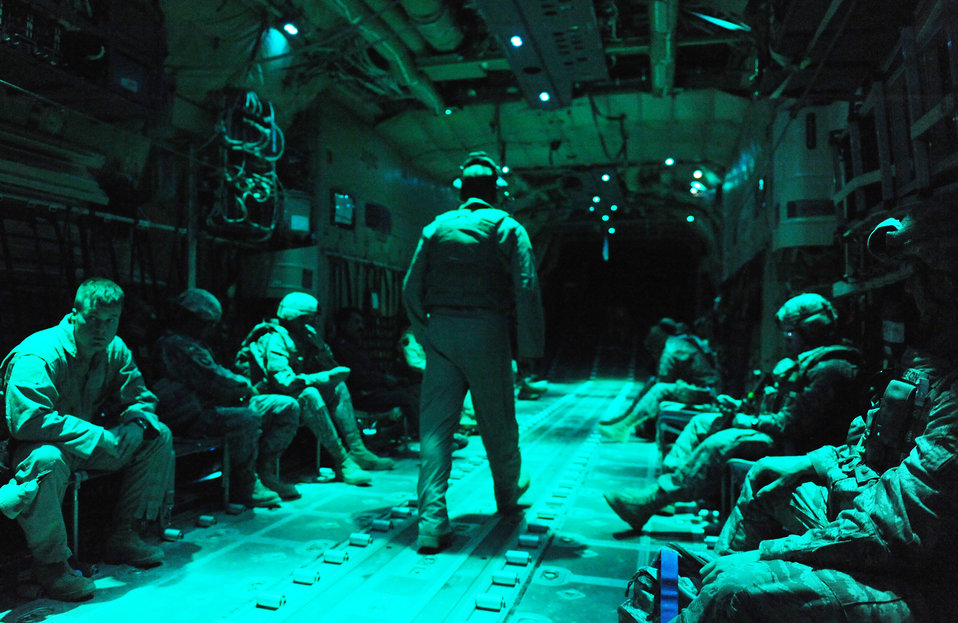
It's been a hard day's night

U.S. forces aboard a C-130 Hercules travel to Kabul, Afghanistan, in support of Operation Enduring Freedom Oct. 26, 2009.